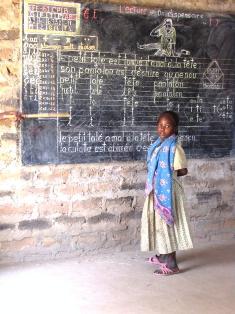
A young Central African refugee recites a lesson in Amboko Camp in southern Chad on February 20, 2009. In fiscal year 2010, two principal factors drove PRM’s development of a humanitarian strategy for Chad and the region. The first was security. Despite the presence of UN peacekeepers in Chad, both civilians and humanitarian workers have been subjected to an increasing level of banditry: robbery, carjackings, and at times even kidnapping and murder. Now the Chadian government has asked the UN mission to leave the country, an event that would further expose humanitarians and refugees to danger. The second factor was eastern Chad’s qualification as a protracted refugee situation, meaning it has been in existence for over five years. Even with some hopeful political steps towards peace in Darfur in early 2010, the refugees will likely remain in Chad for several more years. With lifesaving services well-established in the camps, therefore, PRM has shifted its focus to programs that provide a longer-term benefit, such as education and vocational training.